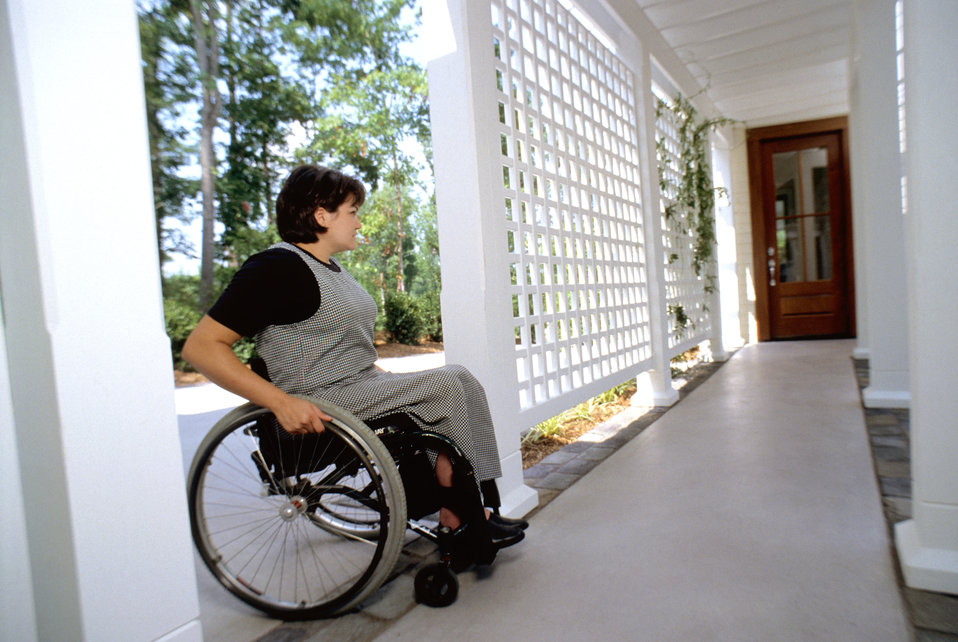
This is one of two images, (PHIL# 9165, 9166), which depicted an adult mobility-challenged woman, who was in her wheelchair as she was rolling from a home's driveway onto a smooth concrete pathway, then shown here, rolling unto a stepless route leading to the home's back door visible in the background. The accessible route avoided stairs, and abrupt changes in height, which would be a problem for all users, especially those with mobility problems, child strollers, or rolling luggage. The covered entrance provided protection from the elements when entering and exiting, particularly when extra time was needed.